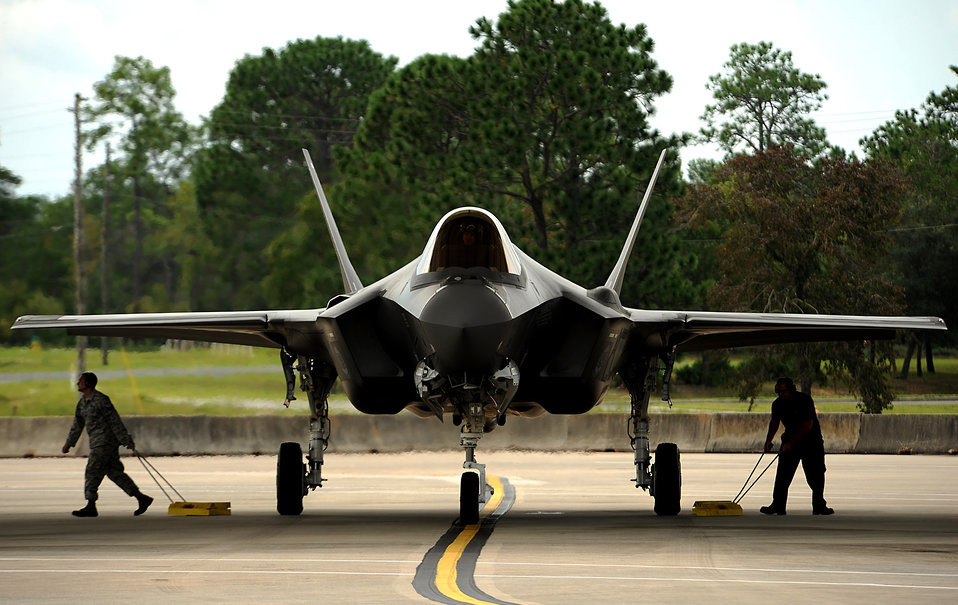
F-35A Lightning II joint strike fighter crew chief Staff Sgt. Darron Cothran (left) and a Lockheed Maintainer from the 58th Aircraft Maintenance Unit at Eglin Air Force Base, Fla., pull the wheel chalks on the jet before taking off for a local training mission over the Emerald Coast Sept. 18, 2012.